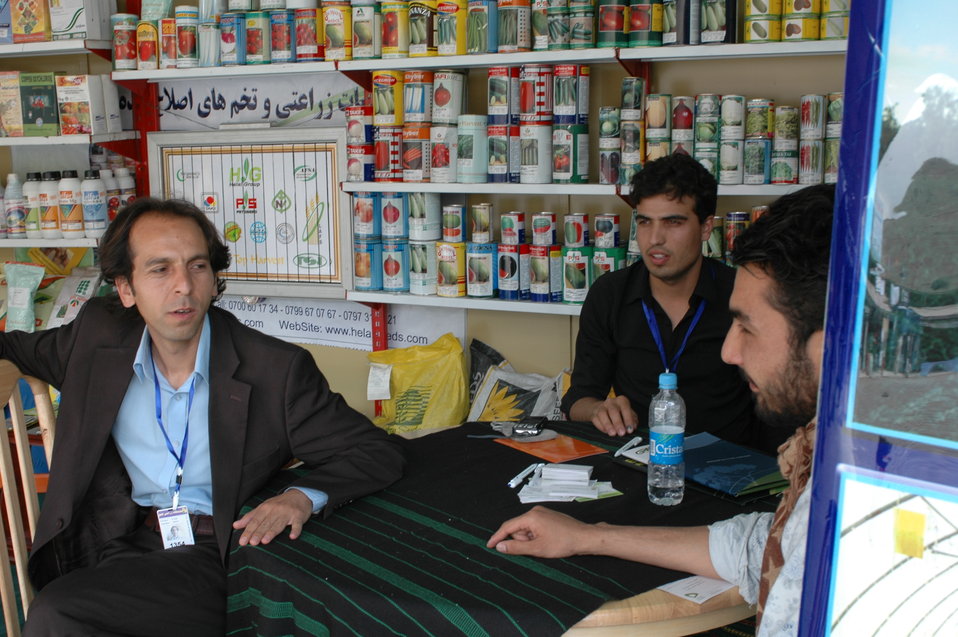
AgFair making deals

On May 20, 2009, Ambassador Eikenberry joined government officials, farmers, agribusiness representatives, and international investors at the launch of the Kabul International AgFair on May 20. Held at the Ministry of Agriculture, Irrigation and Livestock’s Badam Bagh Demonstration Farm in Kabul, the fair showcases Afghanistan’s wealth of fresh produce, provides lucrative business opportunities, and demonstrates innovative agricultural technologies. It is expected to attract more than 50,000 participants from May 21-22.

U.S. Ambassador Karl Eikenberry and Afghan Acting Minister of Agriculture, Irrigation and Livestock (MAIL) Saleem Kunduzi gave opening remarks at the AgFair’s launch. “The United States Government is co-sponsoring national and regional AgFairs like this one to encourage trade and generate business opportunities in the agriculture sector,” Ambassador Eikenberry said. “In a country that is 80 percent rural, promoting licit crops and agriculture sector job creation are two essential steps to successful development in the region.”

Member of Parliament Abdul Salam Qazizada offered bold remarks, stating that we need to engage more with farmers in every province throughout the country.

Following the ceremony, Ambassador Eikenberry visited a number of vendors at the fair with Acting Minister Kunduzi and Mr. Qazizada. In speaking with farmers displaying their produce, Ambassador Eikenberry found that many have increased yields due to USAID assistance, have found regional buyers for their produce, and were grateful for the opportunities that AgFair provides.

Ambassador Eikenberry also discussed the state of agriculture with Minister Kunduzi and Mr. Qazizada. They agreed that while some progress has been made, there is a great deal more work to be done. Ambassador Eikenberry reiterated from his speech that USDA Secretary Vilsack recently met with Minister Rahimi to discuss the U.S. commitment to agriculture development. In a message to the Afghan public, Secretary Vilsack stressed that the USG aims to play a leading role by bringing more agriculture experts to the provinces and supporting agriculture research such as the Badam Bagh Demonstration Farm. Additionally, he looks “forward to working together to increase agricultural productivity, which will result in more jobs throughout the entire value chain, and a better quality of life for the citizens of Afghanistan.”

The United States Government is proud to support Afghan agriculture. Since 2002, America has provided more than 1 billion dollars in assistance to agriculture and rural development. AgFairs like the one Ambassador Eikenberry visited creates awareness of Afghanistan’s expanding agricultural sector, promotes new agricultural technologies that increase productivity, and provides a forum to connect farmers to local and international buyers. These results will contribute to Afghanistan’s prosperity.

We are already seeing the results of these fairs. Since 2007, Afghanistan’s agricultural fairs have attracted more than 500,000 participants from across the nation and the world, generated millions of dollars in sales of the country’s high-value produce, and provided participants with a competitive edge in one of the fastest growing markets in Central Asia.

As Ambassador Eikenberry stated, “The word is out – with over 180 international businesses represented at this fair, it is obvious that Afghanistan has sparked the interest, and appetite, of the world.”